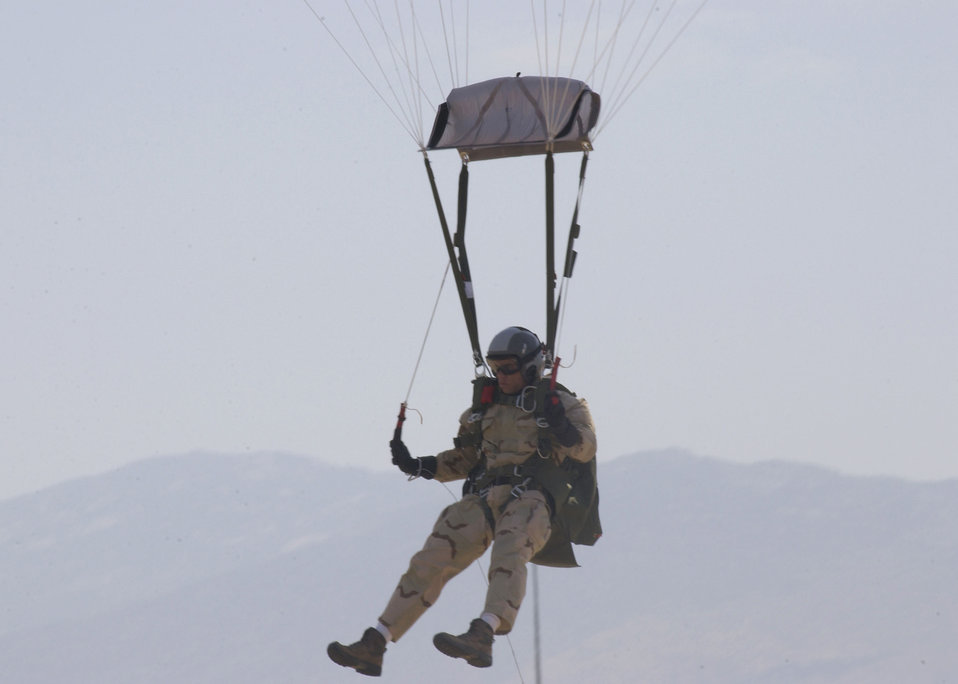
Enjoying the ride

DAVIS-MONTHAN AIR FORCE BASE, Ariz. -- A pararescueman from the 306th Rescue Squadron performs a high-altitude low-opening parachute jump during training here.